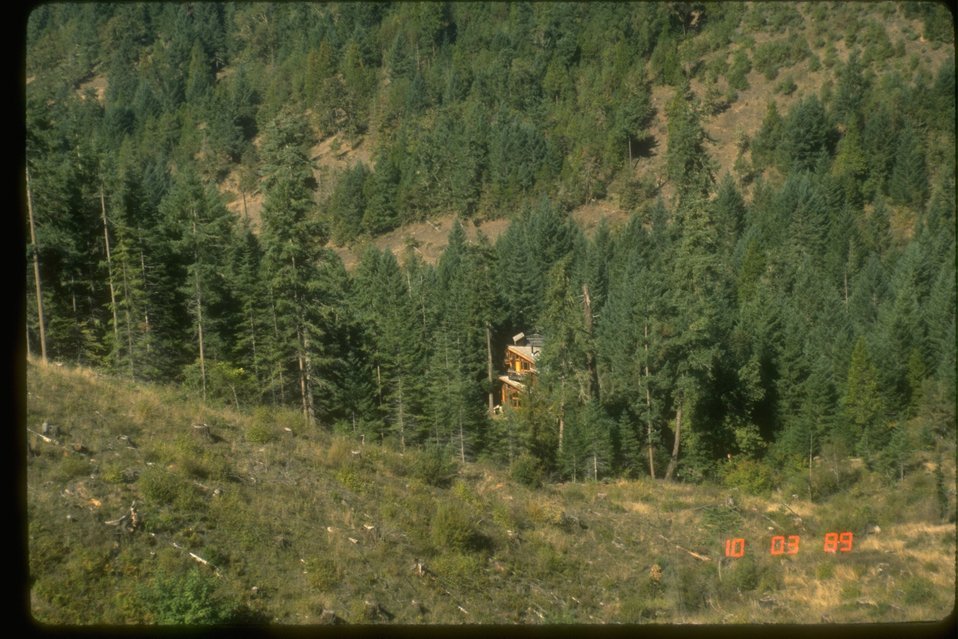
Living Dangerously (Interface)